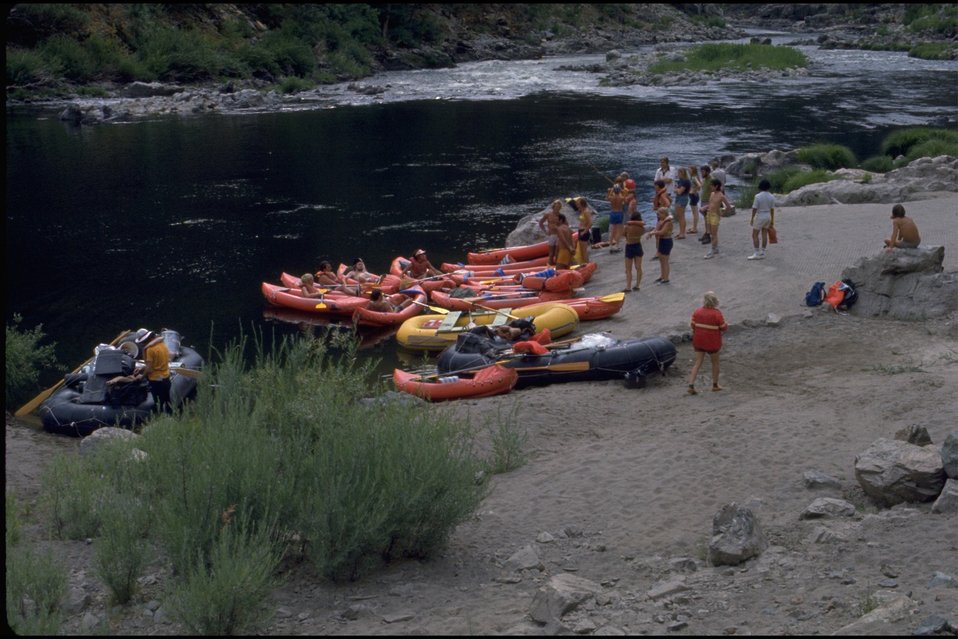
Rogue River, Grave Creek Boat Ramp; beginning of wild section.